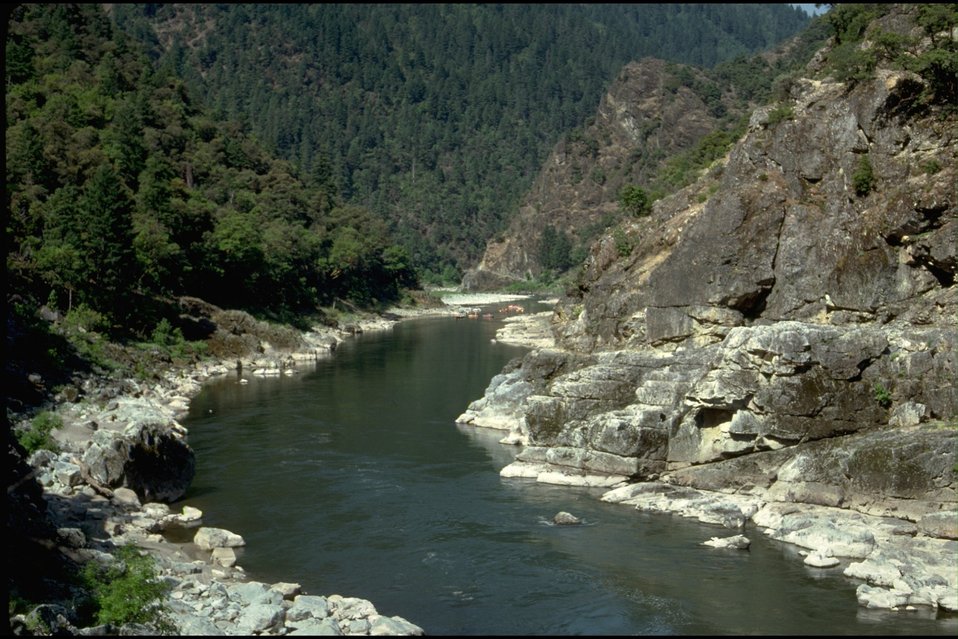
Rogue River - Wild Section.